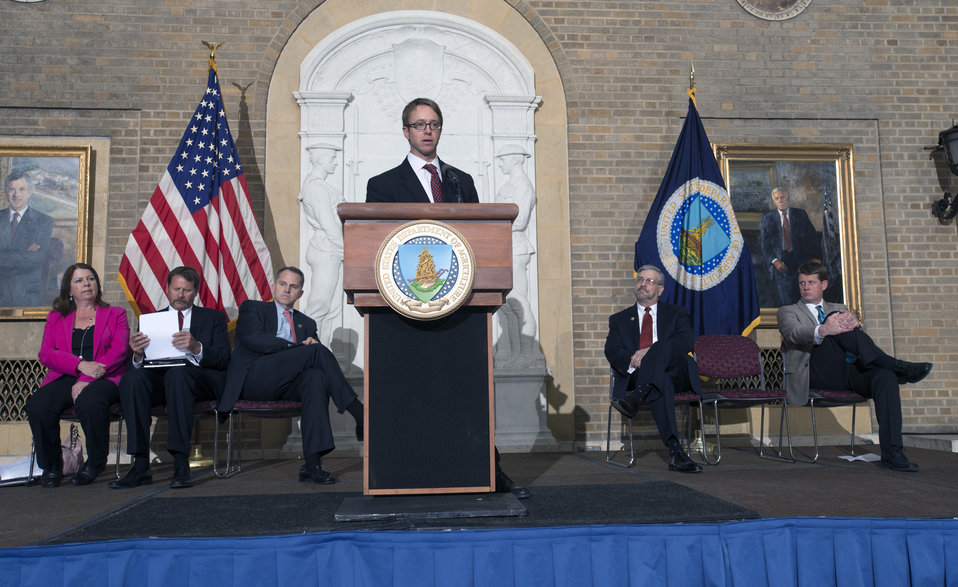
U.S. Department of Agriculture (USDA) National Resources and Conservation (NRCS) Chief Jason Weller speaks to Ducks Unlimited/USA Rice Federation event at USDA in Washington, D.C. on Tuesday, May 6, 2014. (Behind the Chief from l to r: President and CEO of USA Rice Betsy Ward, Chairman of USA Rice Producers’ Group John Owen, President of Ducks Unlimited George Dunklin, CEO of Ducks Unlimited Dale Hall, and Director of Conservation Planning at Ducks Unlimited Dr. Mark Petrie).